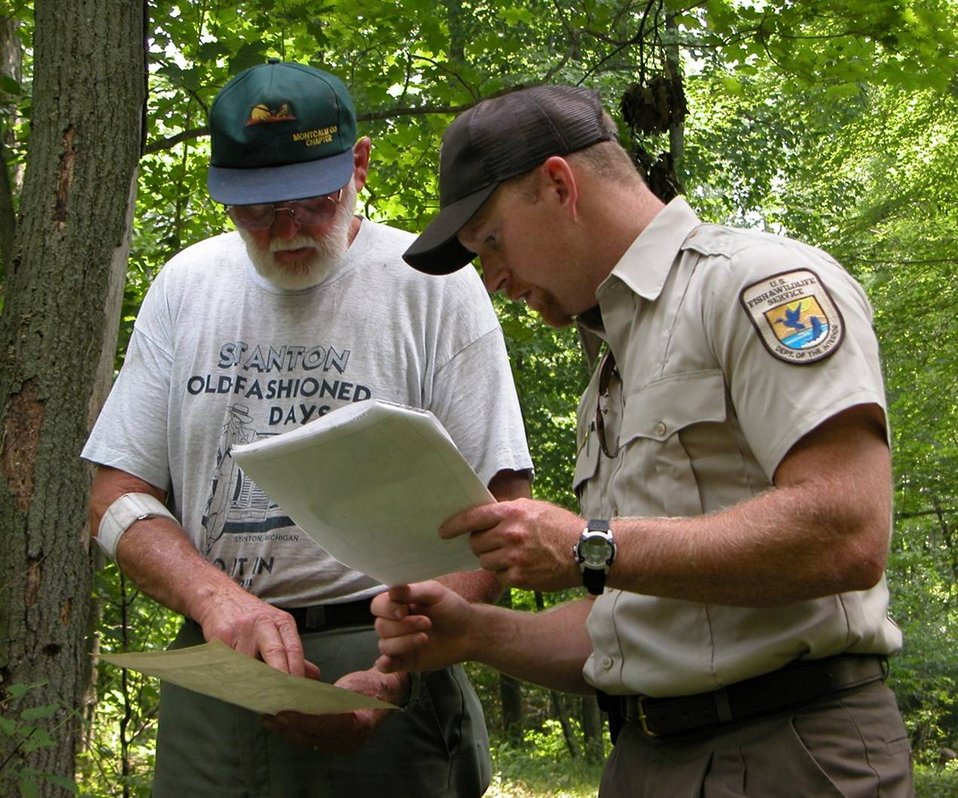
Private Landowner Partnership - Michigan

Partners for Fish and Wildlife staff meets with private landowner in Michigan to review habitat restoration project.